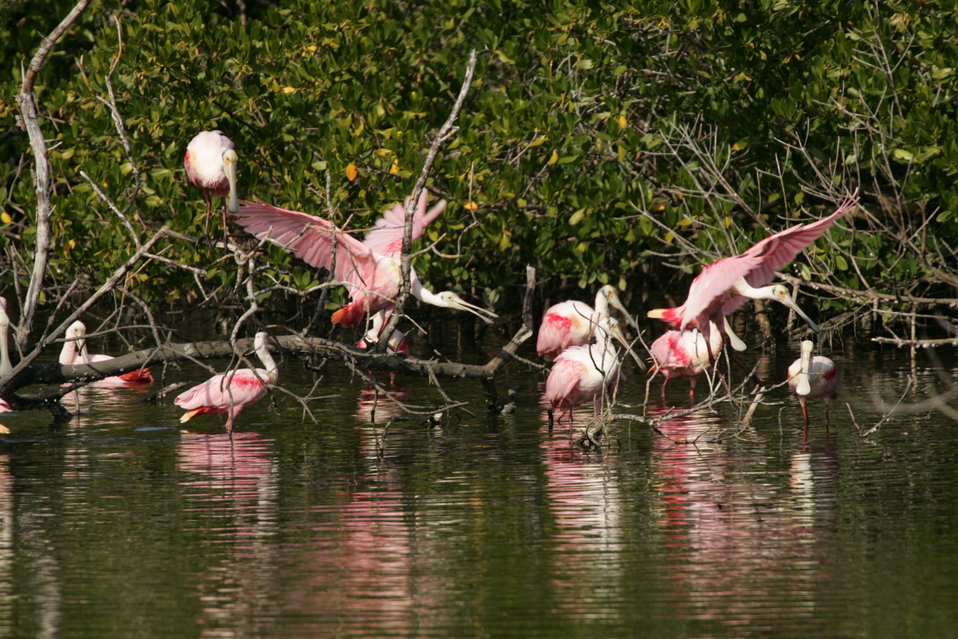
Roseate Spoonbills, J.N. 'Ding' Darling NWR